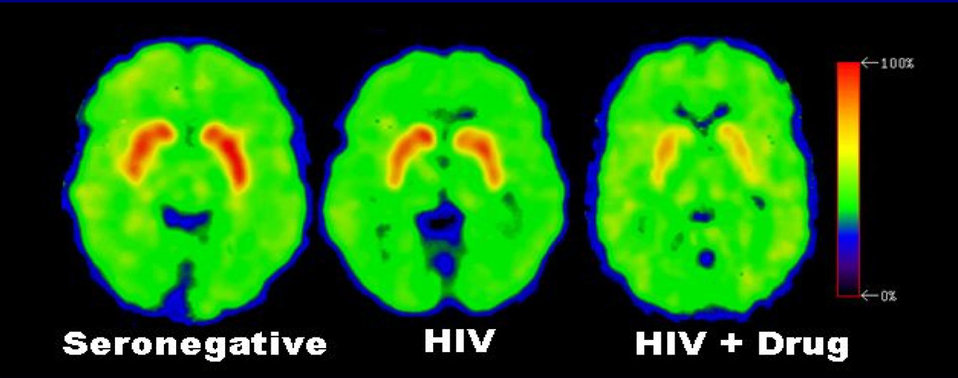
Brain Degeneration

Acceleration of HIV degeneration of dopamine cells with cocaine